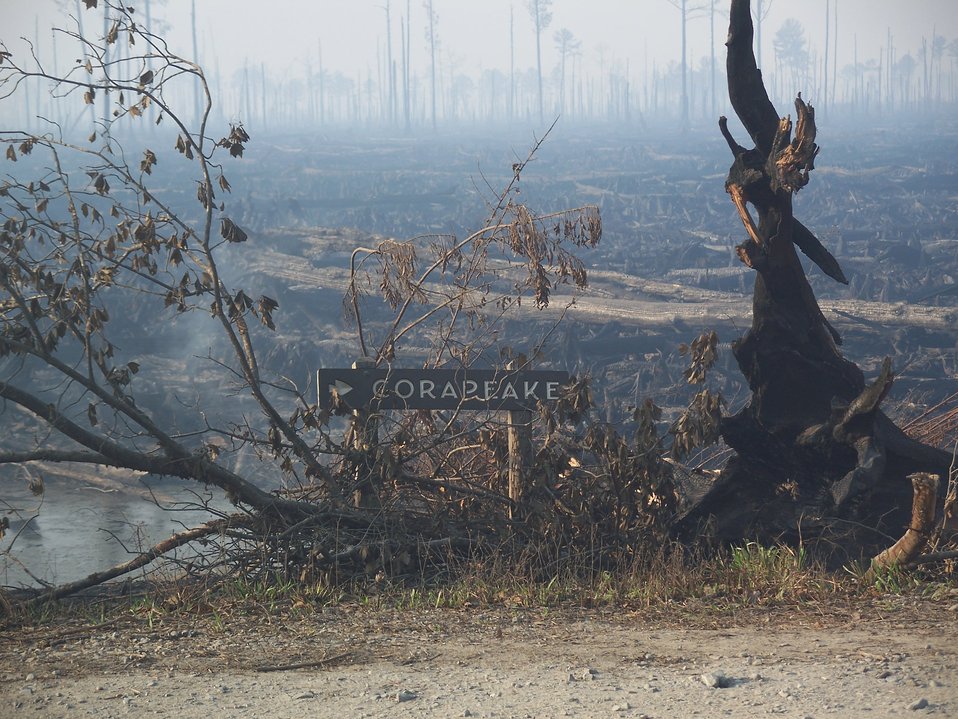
Corapeake burned

Suffolk, VA, August 2011: Areas north of Corapeake ditch burned with great intensity during the Lateral West Fire on Great Dismal Swamp National Wildlife Refuge Credit: Greg Sanders/USFWS